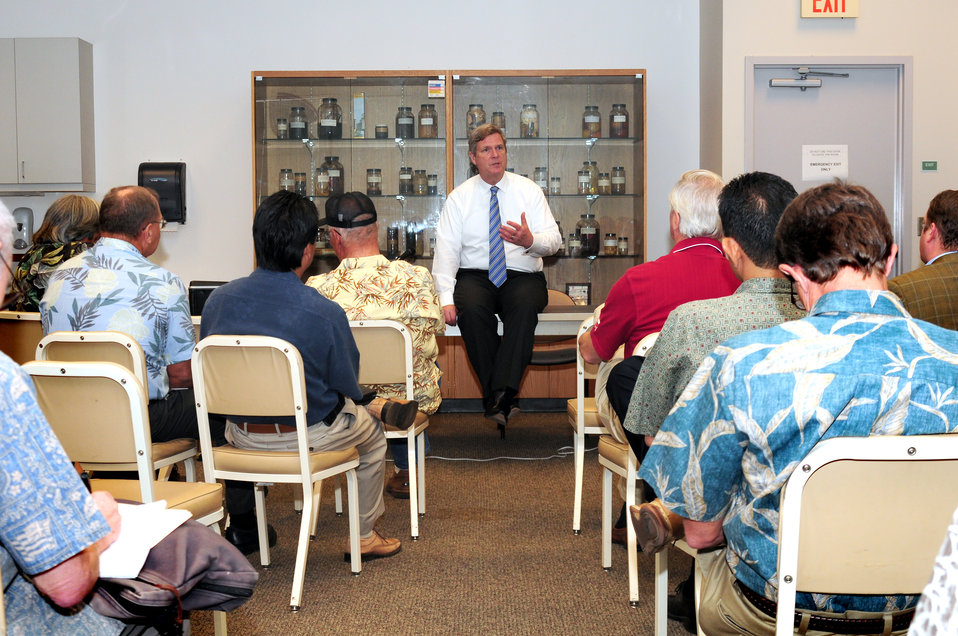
Agriculture Secretary Tom Vilsack speaks at a stakeholder meeting at the Department of Agriculture State of Hawaii Plant Quarantine Building to discuss USDA programs, Agricultural challenges in Hawaii, and alternative energy. In Honolulu, HI, on Tuesday, January 10, 2010.